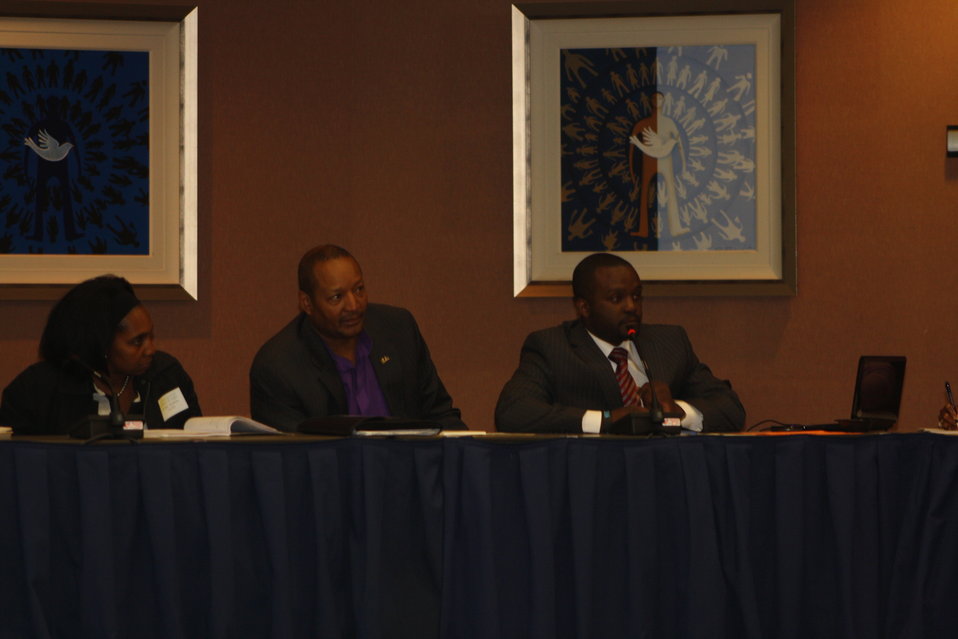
Faith-Based and Neighborhood Partnership launch at Atlanta's Carter Center